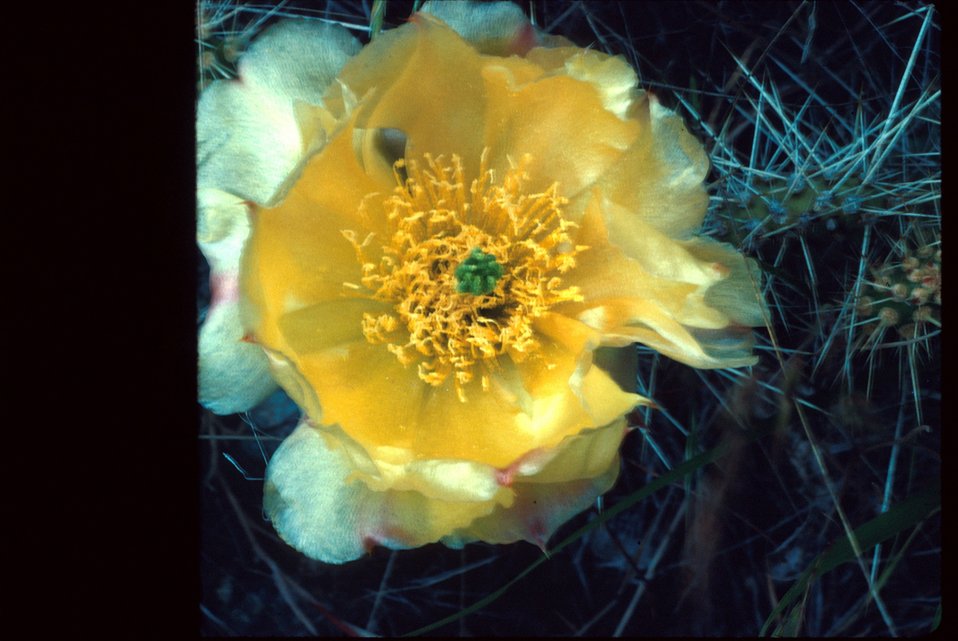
Prickly Pear Opuntia Wildflower